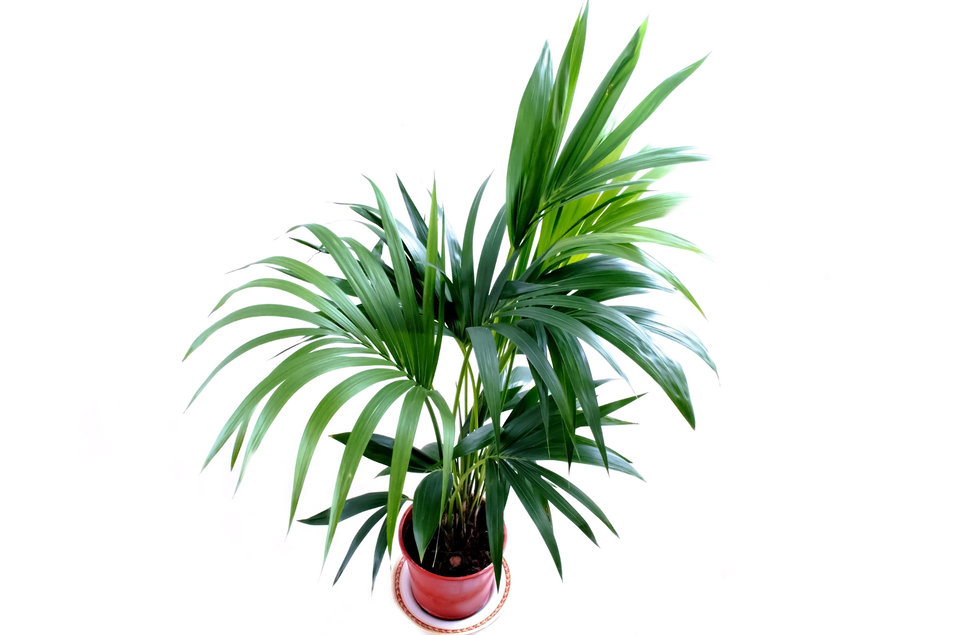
Plant

Palm tree in flowerpot isolated on white background.